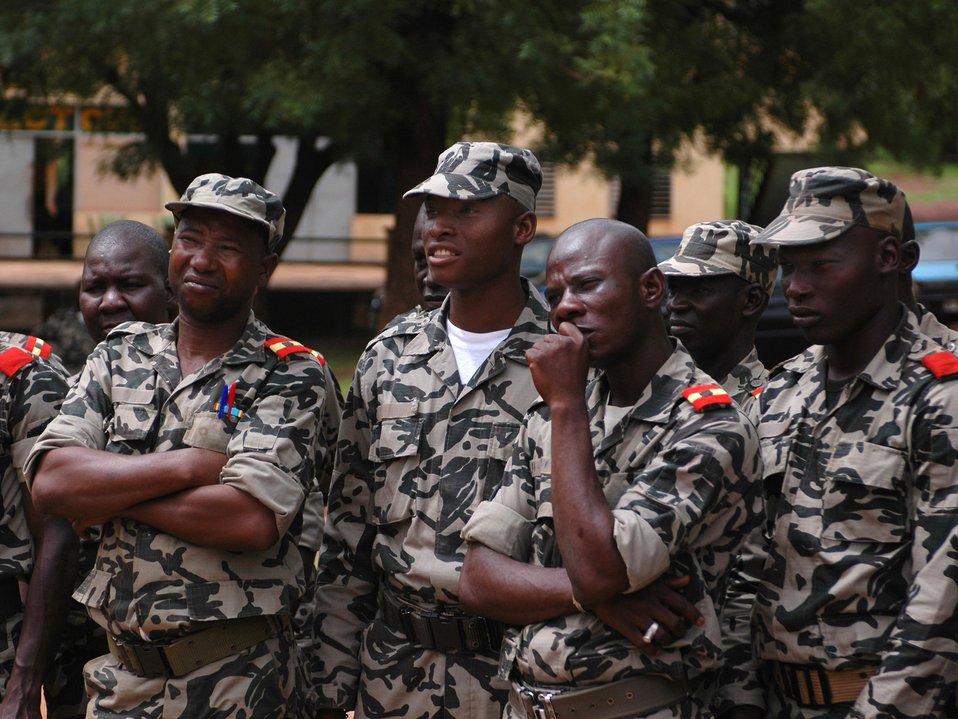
Malians learn life-saving techniques

Malian medics and nurses watch a scenario during a hands on medical training July 15 in the village of Kati during MEDFLAG 08. More than 90 servicemembers deployed to Mali for MEDFLAG 08, multi-national medical training exercise designed to enhance medical capabilities and readiness for U.S. and African forces.